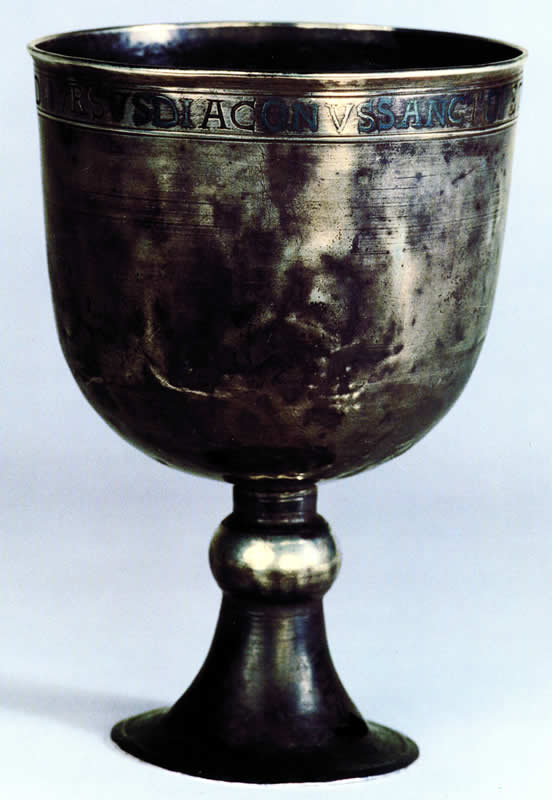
Italiano: Calice del Diacono Orso. V-VI secolo d.C. Lamon (BL) Italia